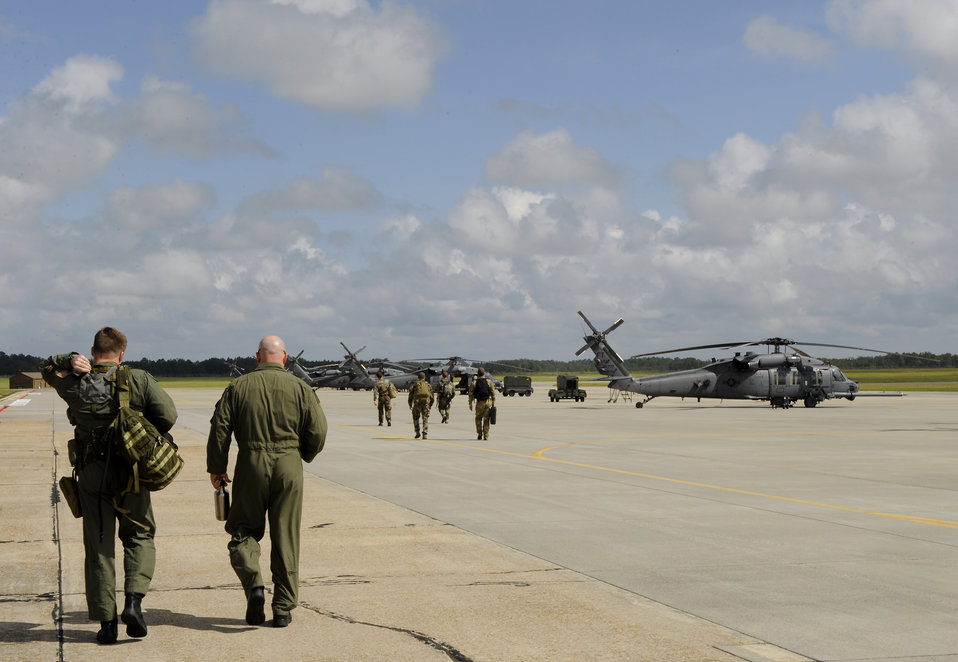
23rd Wing deploys

Aircrews from the 23rd Wing at Moody Air Force Base, Ga., prepare to depart for Gulfport, Miss., Sept. 12. The helicopters and aircrews from the 41st Rescue Squadron will stage out of Gulfport and provide search and rescue support during Hurricane Ike.